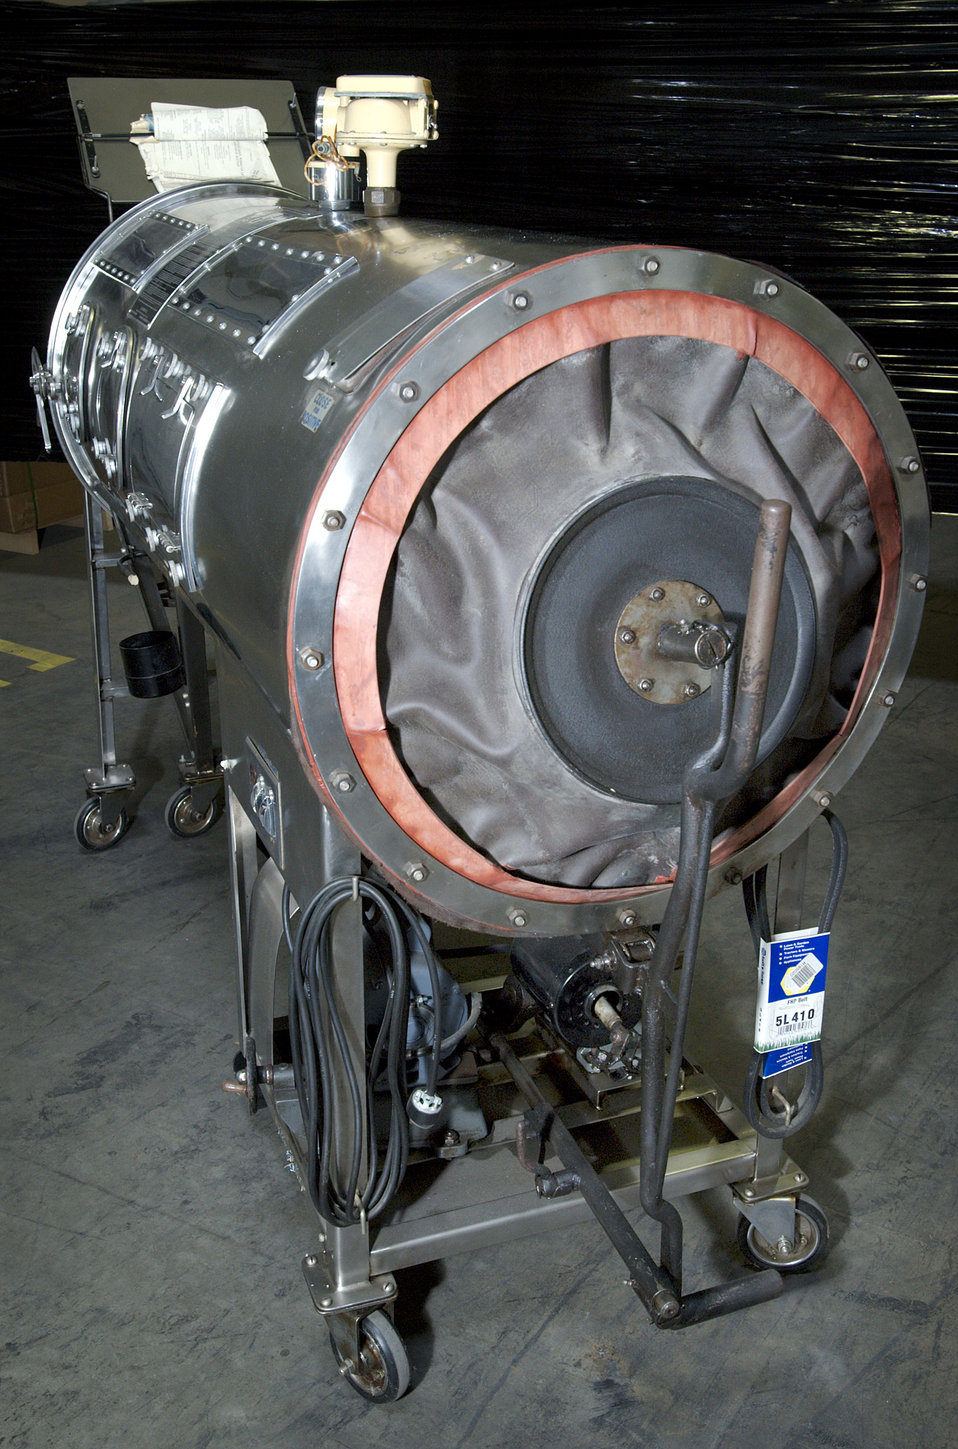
Photographed from the rear, this Emerson respirator, also known as an 'iron lung', was used by polio patients whose ability to breath was paralyzed due to this crippling viral disease.